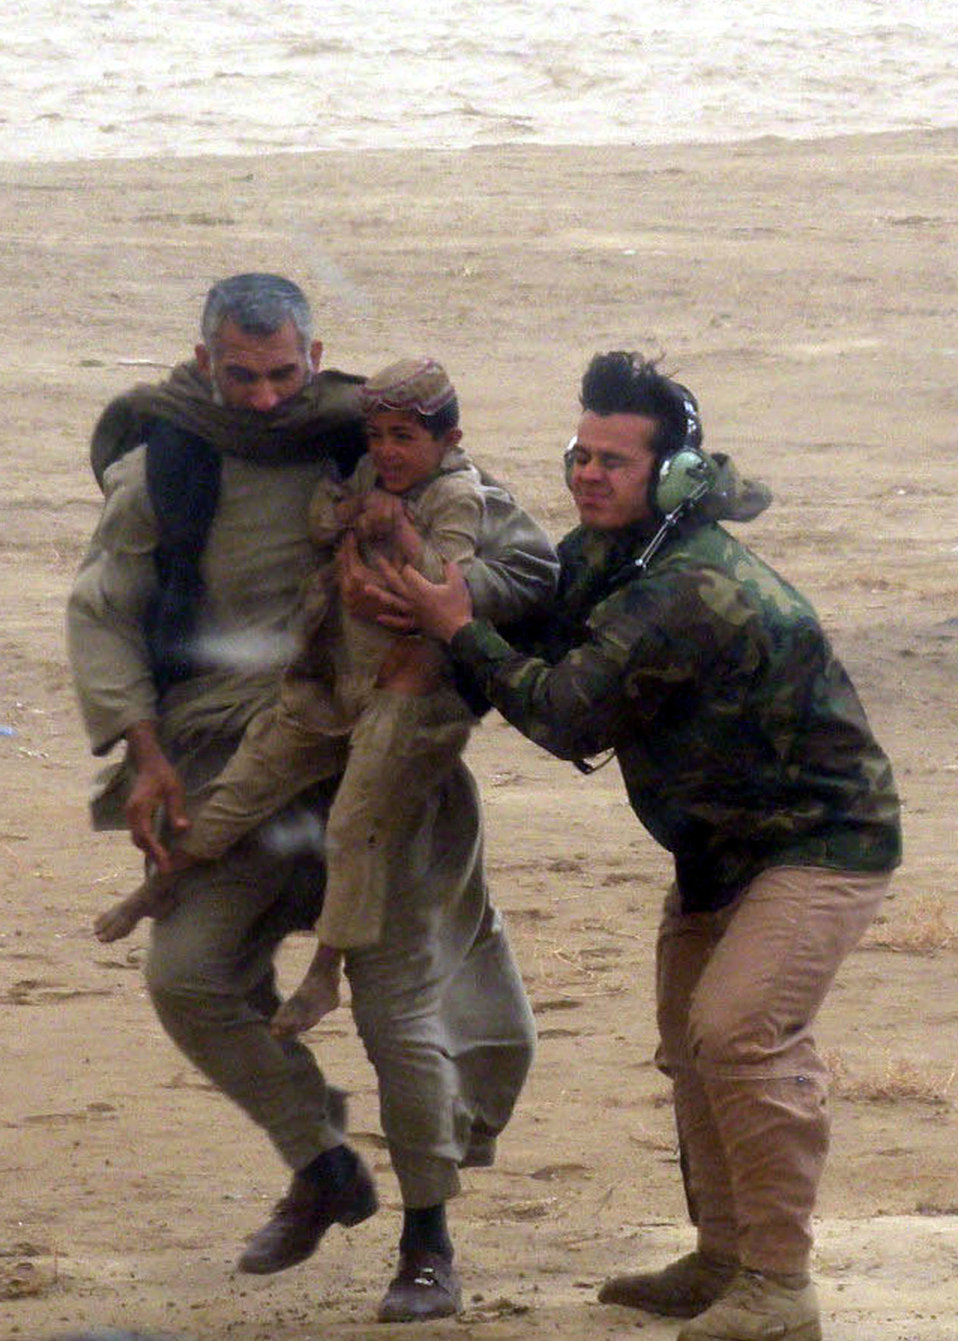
Afghans, Airmen conduct rescue mission following flash flood

An Afghan National Army Air Corps servicemember helps a man of the nomadic Kuchi tribe carry his frightened child aboard a helicopter for an airlift to safety as their village is nearly overtaken by a flash flood Feb. 8, 2010, in Kandahar, Afghanistan.